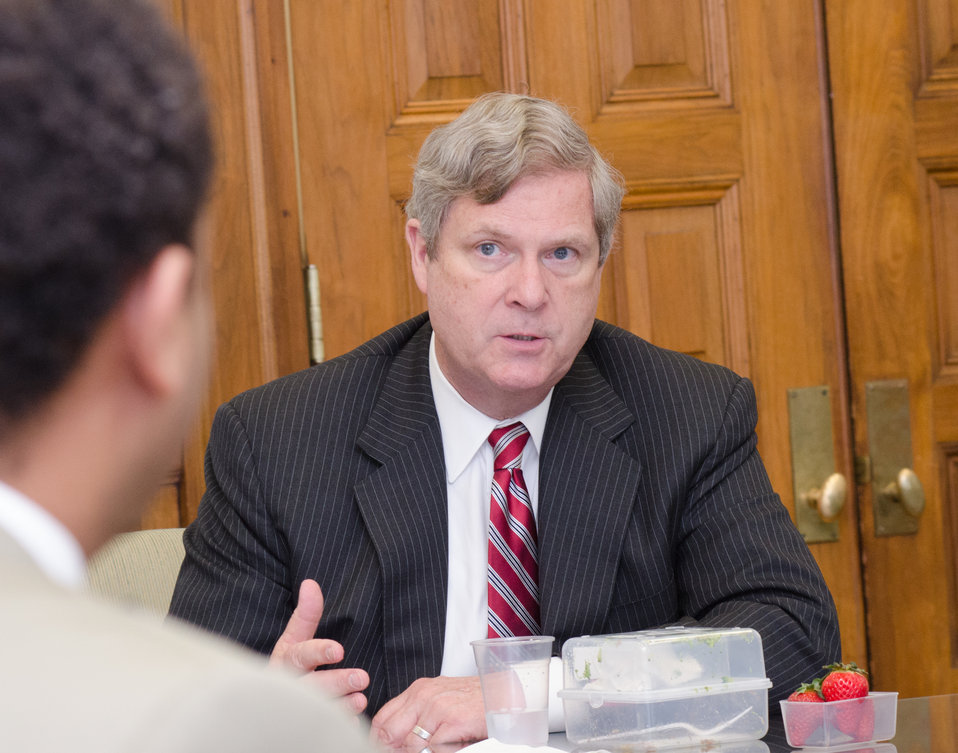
U.S. Department of Agriculture (USDA) Secretary Tom Vilsack, talks with Farm Service (FSA) Agency Confidential Assistant Leigh Allen; Food, during a Brown Bag Lunch that Secretary Vilsack periodically has with employees, in his conference room, on Tuesday, April 9, 2013, in Washington, D.C.